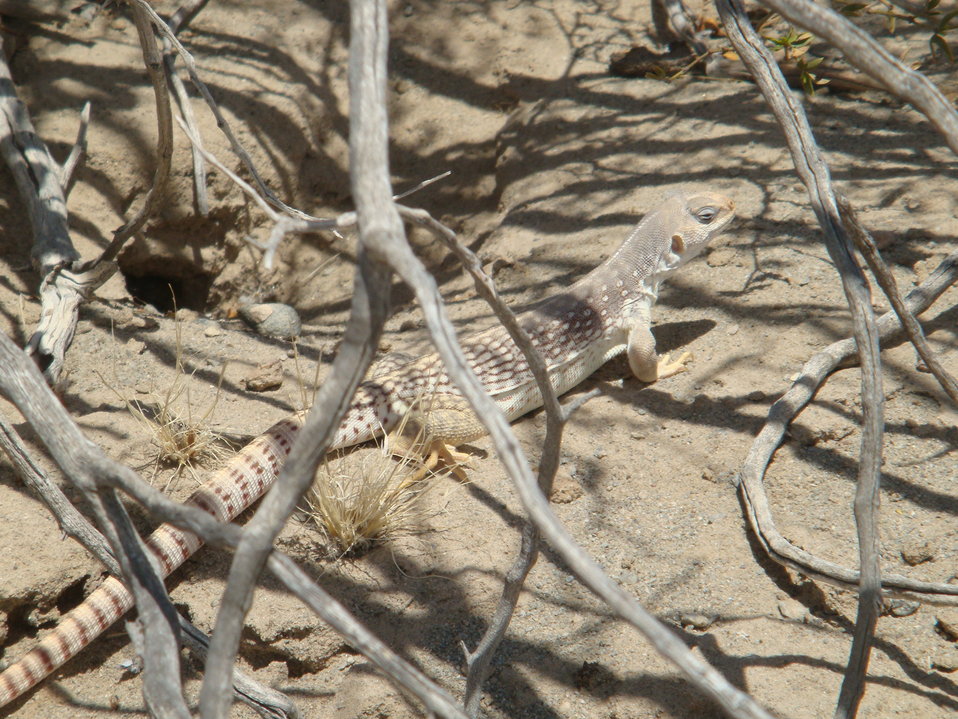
Desert Iguana

This desert iguana was photographed in California's Colorado Desert, part of the larger Sonoran Desert located in Riverside County.

Desert iguanas are medium-sized lizards reaching lengths of up to 16 inches, including the tail, and are most commonly found in sandy desert regions, among rock and creosote bush. This lizard is tolerant of high temperatures and can be seen active during the mid-day after other lizards have retreated to their burrows to avoid the extreme heat.

Primarily herbivorous, desert iguanas eat the leaves and yellow flowers of the creosote bush, but will also feed on insects. They will burrow around and under the plant's roots for shelter and to avoid predators, but will often use ready-made burrows of kit foxes and desert tortoises. (Tannika Engelhard/USFWS )